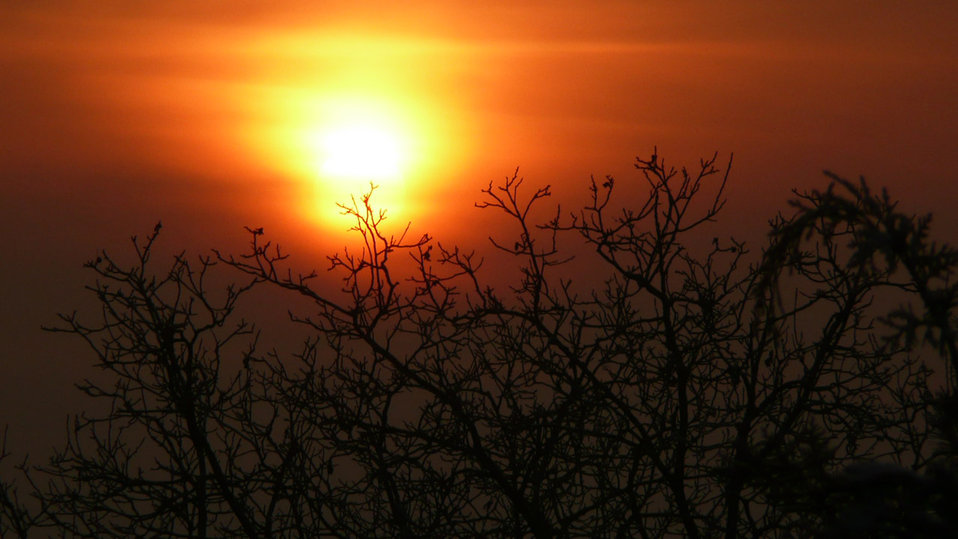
Tree and the setting sun.